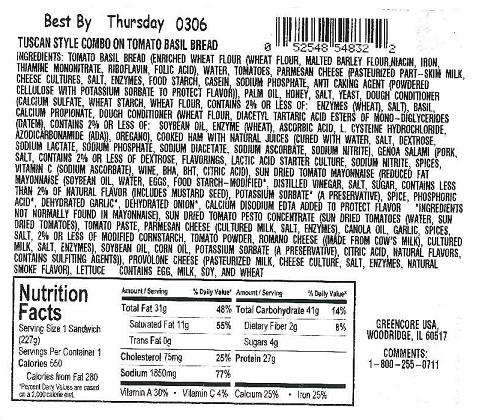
RECALLED – ‘Fresh To Go Tuscan Style Combo on Tomato Basil Bread’ sandwich

March 4th, 2014 – Product Recall – HC Schau and Sons issues allergy alert on undeclared Pine Nuts in ‘Fresh To Go’ Tuscan Style Combo on Tomato Basil Bread (sandwich).